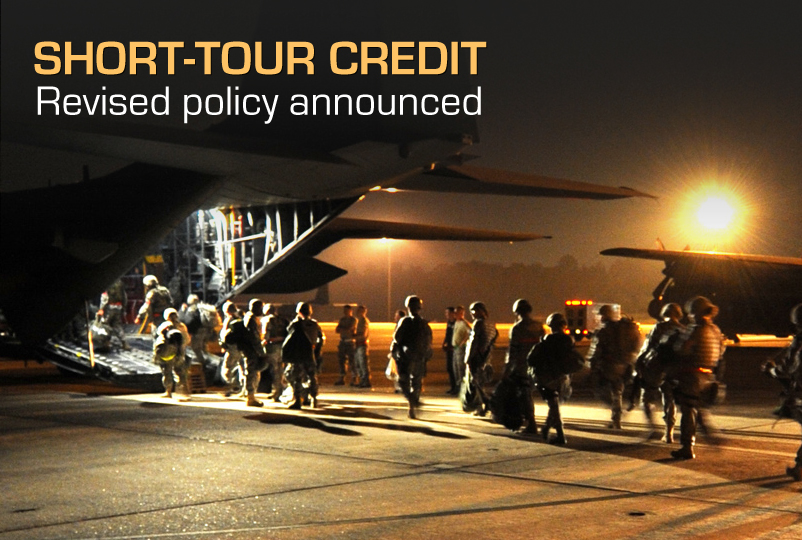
Short-tour credit